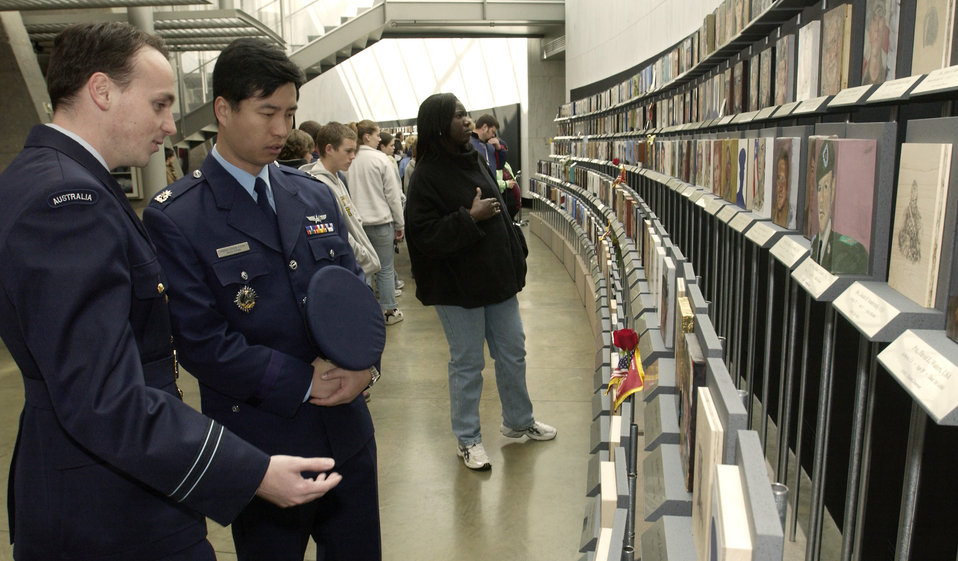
'Faces of Fallen' exhibit open at Arlington

ARLINGTON NATIONAL CEMETERY, Va. (AFPN) - Family members and other spectators take in the